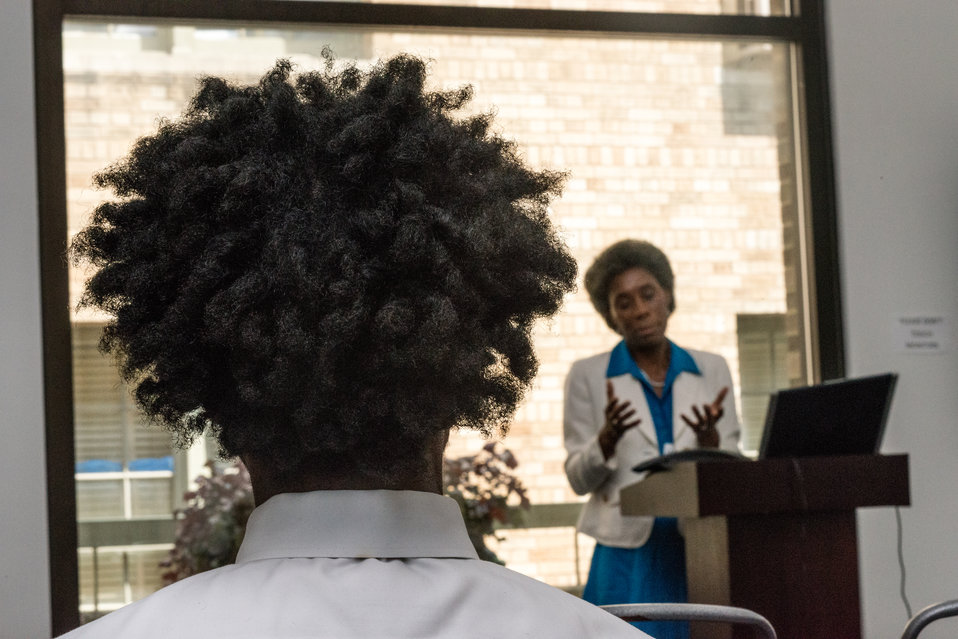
Sage Horizons Consulting Owner Cynthia Gibbs speaks at the U.S. Department of Agriculture’s (USDA) Rural Development (RD) 2nd Annual Cultural Transformation kickoff opening ceremony and forums, themed “Employees Influencing Change,” on Tuesday, Aug. 13, 2013, USDA in Washington, D.C.